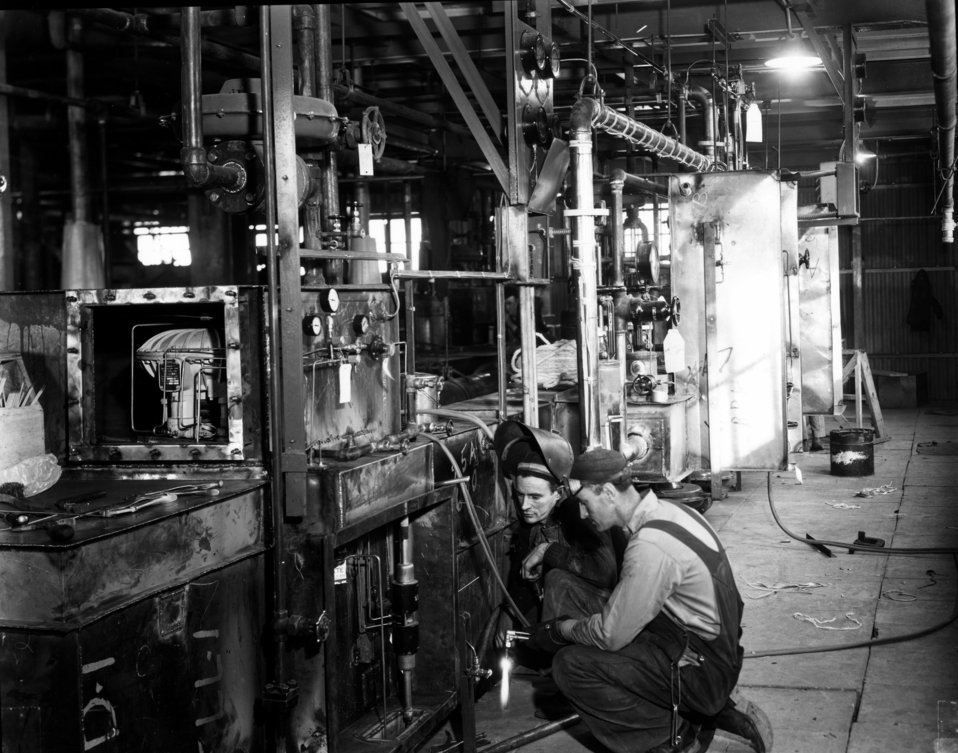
K-25 at Oak Ridge